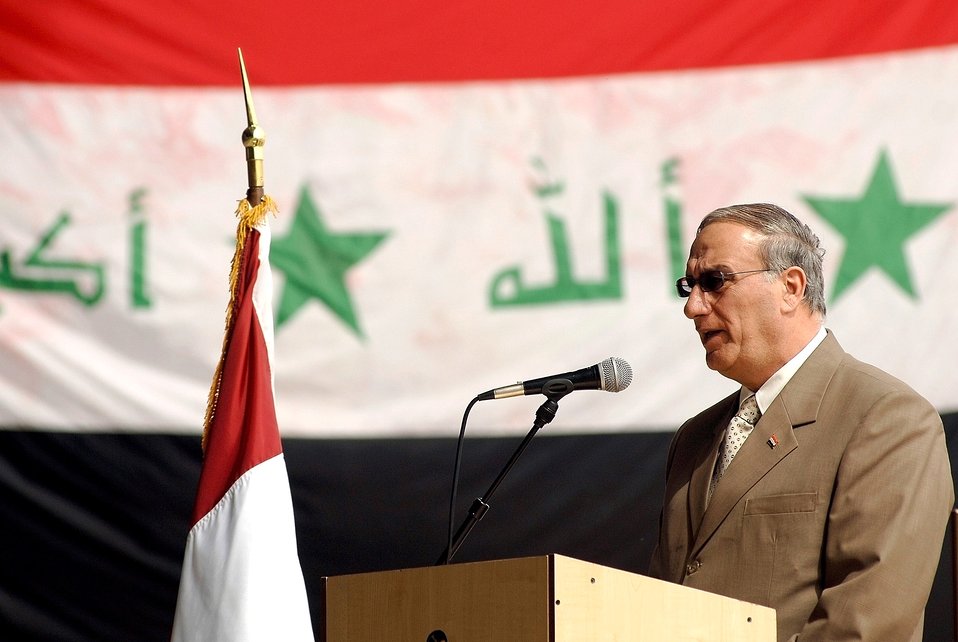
Iraqi air force celebrates 76th anniversary

Iraqi Minister of Defense Abd al-Qadir al-Mufriji addresses a crowd of approximately 100 distinguished guests April 22 during the 76th anniversary of the Iraqi air force at the New Al Muthana Air Base in Baghdad, Iraq.